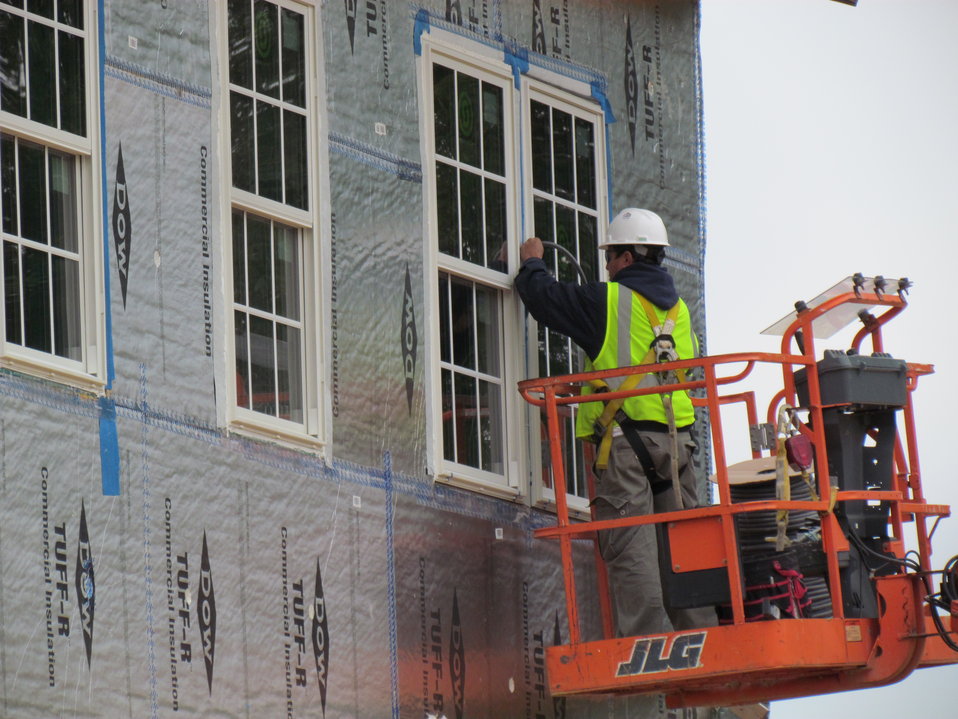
Net-Zero Energy Residential Test Facility - Working installing windows on front of facility.